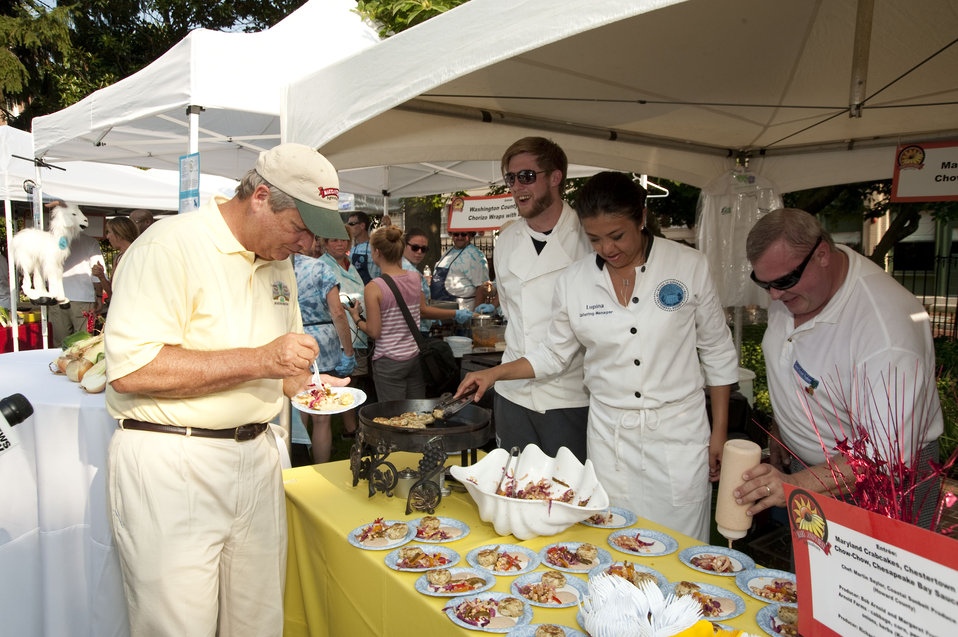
U.S. Department of Agriculture Secretary Tom Vilsack, Co-Host 4th Annual Maryland Buy Local Cookout, tries food items prepared at the 4th Annual Buy Local cookout held in Annapolis MD, on Thursday, July. 21, 2011.